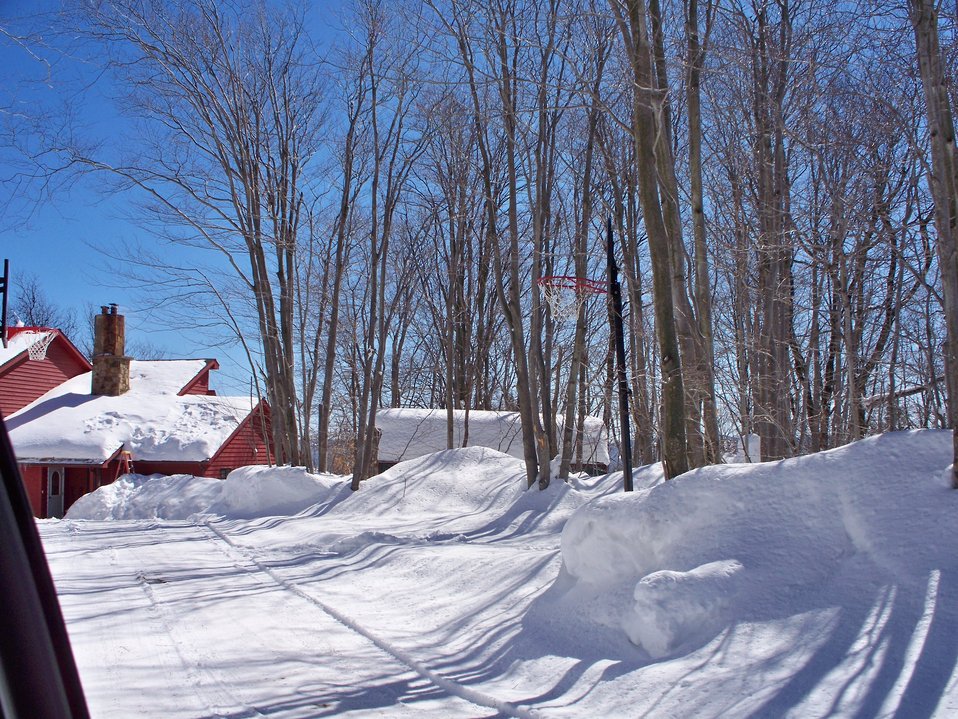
Following record totals of snow in February 2010, a trip to the West Virginia mountains.